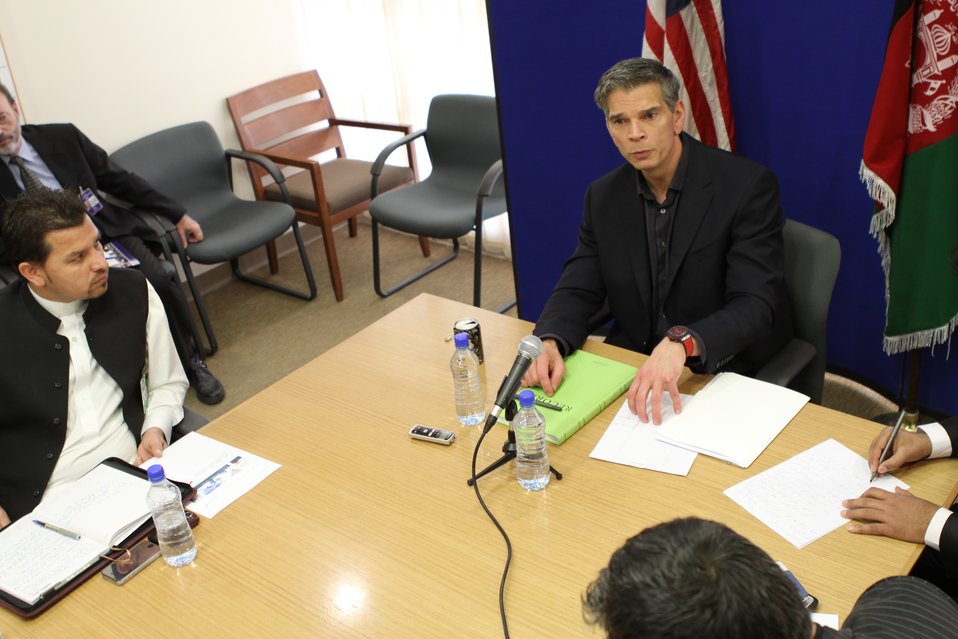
USAID Mission Director Earl Gast Conducts a Media Roundtable with Afghan Media, March 17, 2011